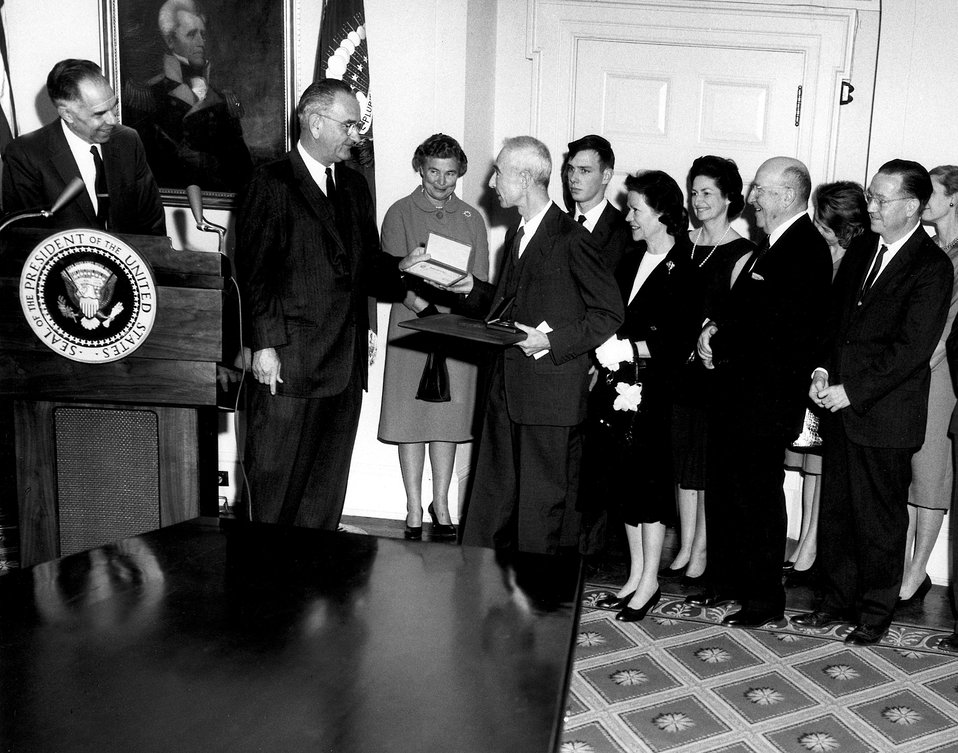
Fermi Award, Oppenheimer, 1963.